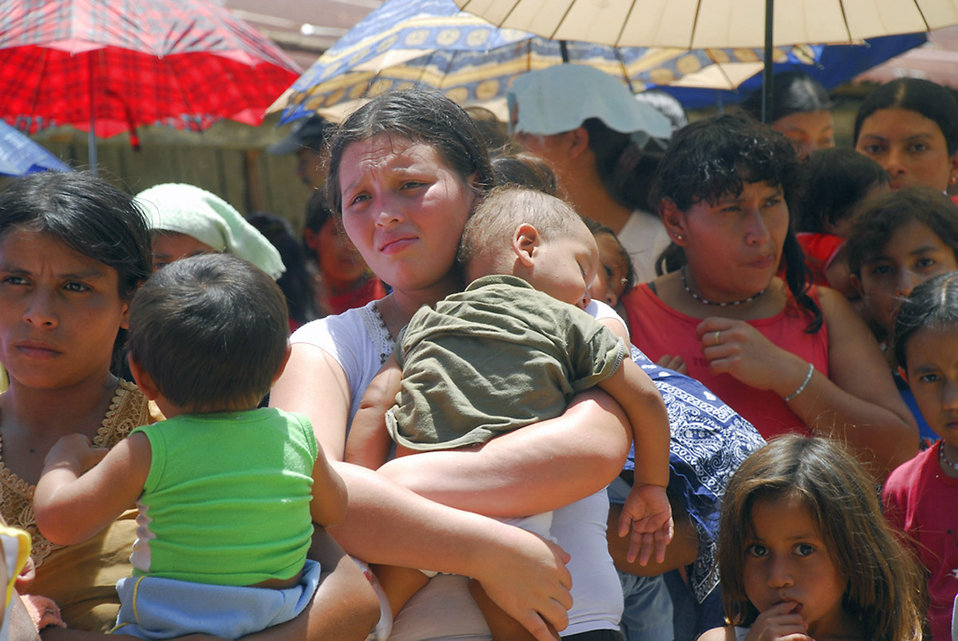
MEDRETE provides free medical care

More than 700 people were seen during a medical readiness training exercise in Santa Barbara, Honduras, July 25. People who attended stood in lines for up to three hours to be seen by U.S. and Honduran medical officials.